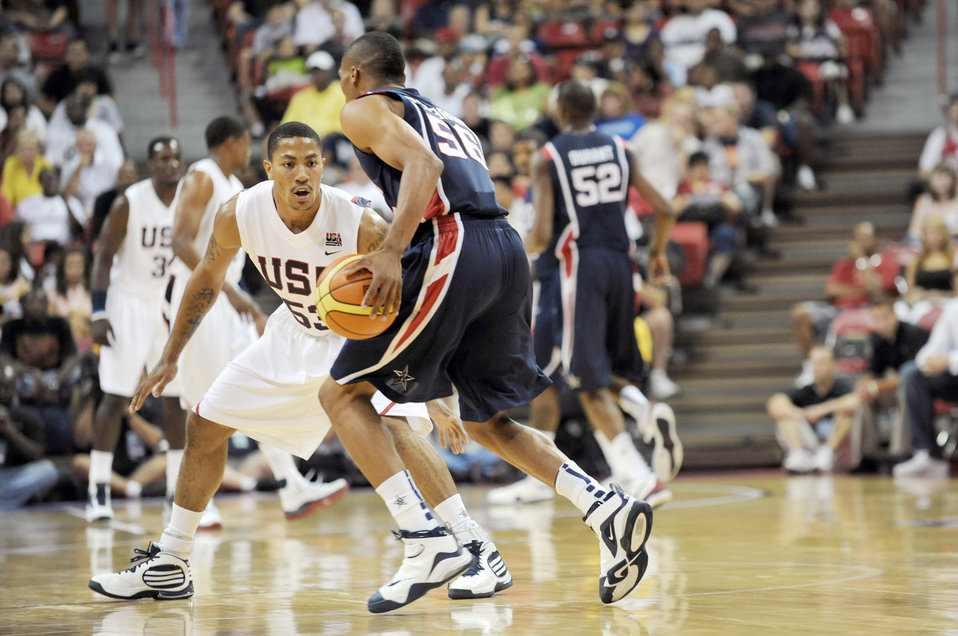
Nellis Airmen honored at USA Basketball exhibition

Oklahoma City Thunder guard Russell Westbrook moves the ball up the court against Chicago Bulls Derrick Rose during a USA Basketball exhibition game at the Thomas and Mack Center in Las Vegas July 25. The exhibition allows the professionals to work as a team for the 2012 Summer Olympic Games.